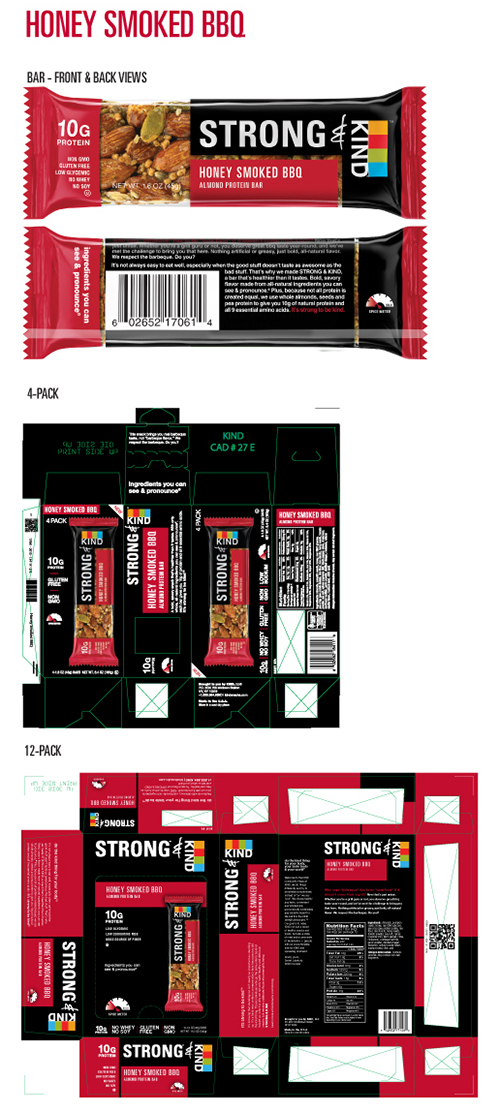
RECALLED – Bars

May 21, 2014 – Product Recall – Kind Healthy Snacks Issues Allergy Alert Due to Potential Presence of Peanut Protein in Strong & Kind Bars and Kind Healthy Grains Maple Pumpkin Seeds Bars.